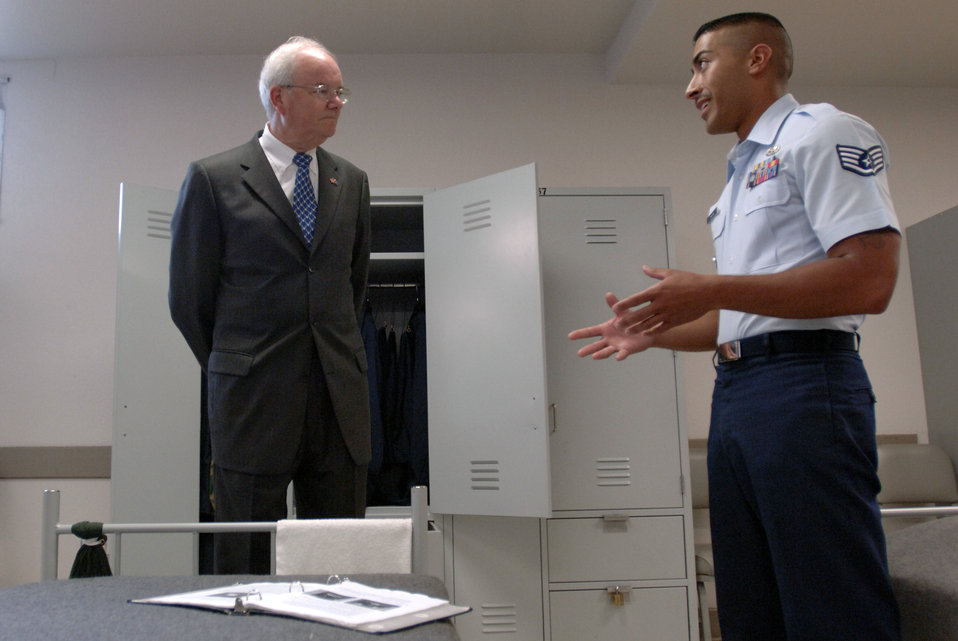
Secretary Wynne expects Airmen to continue to excel

Staff Sgt. Carlos Damien talks to Secretary of the Air Force Michael W. Wynne at Lackland Air Force Base, Texas, on Friday, June 2, 2006, about how training instructors help transform basic trainees from civilians to Airmen. Secretary Wynne was in San Antonio visiting various military installations and training sites.